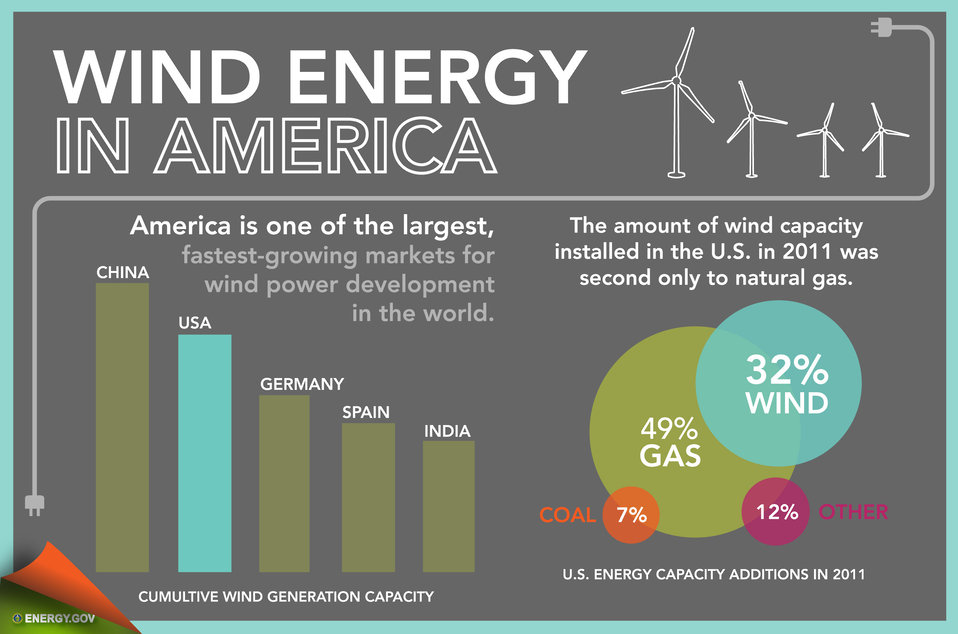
Wind Energy in America - Slide 1